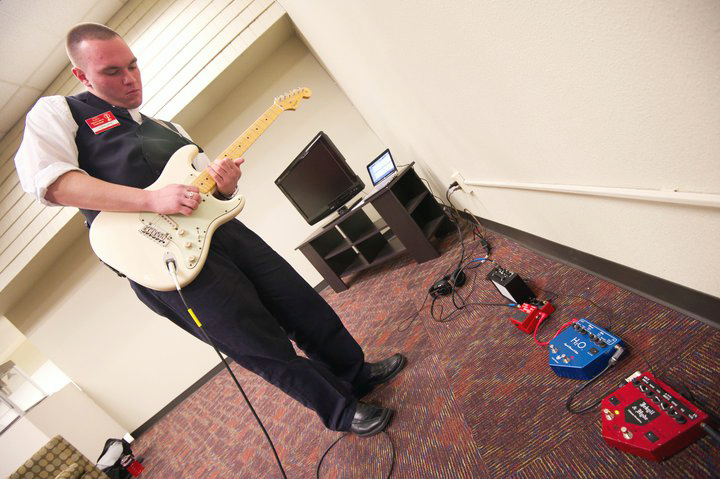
Airmen win honors at worldwide talent search

Airman 1st Class Jeffrey Cleghorn practices his guitar solo Dec. 7, 2010, before his audition with the 2011 Tops in Blue Team at Lackland Air Force Base, Texas. Tops in Blue held auditions for Airmen interested in being part of the 2011 Team.